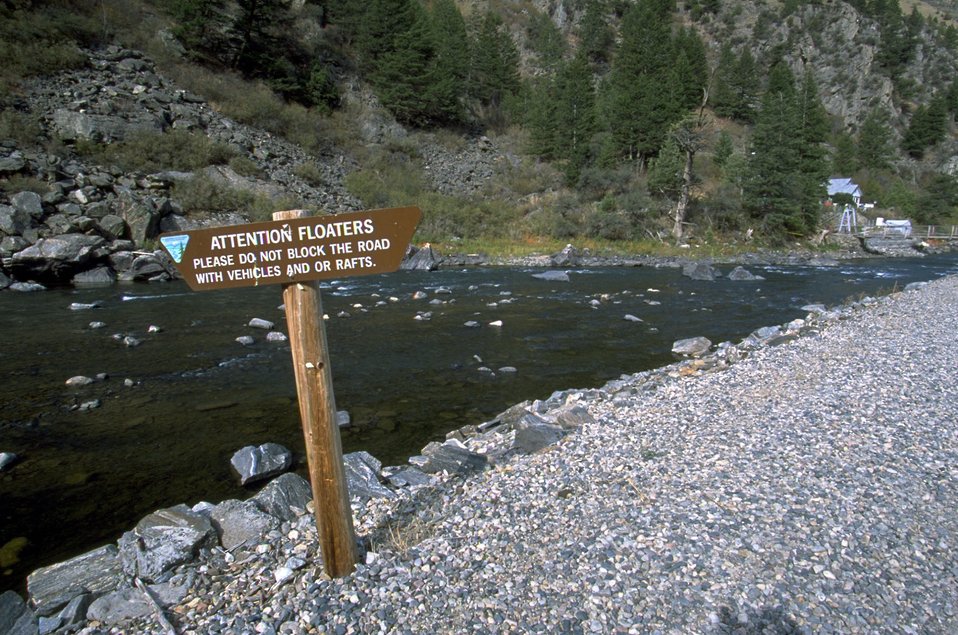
Attention Floaters sign on the Madison